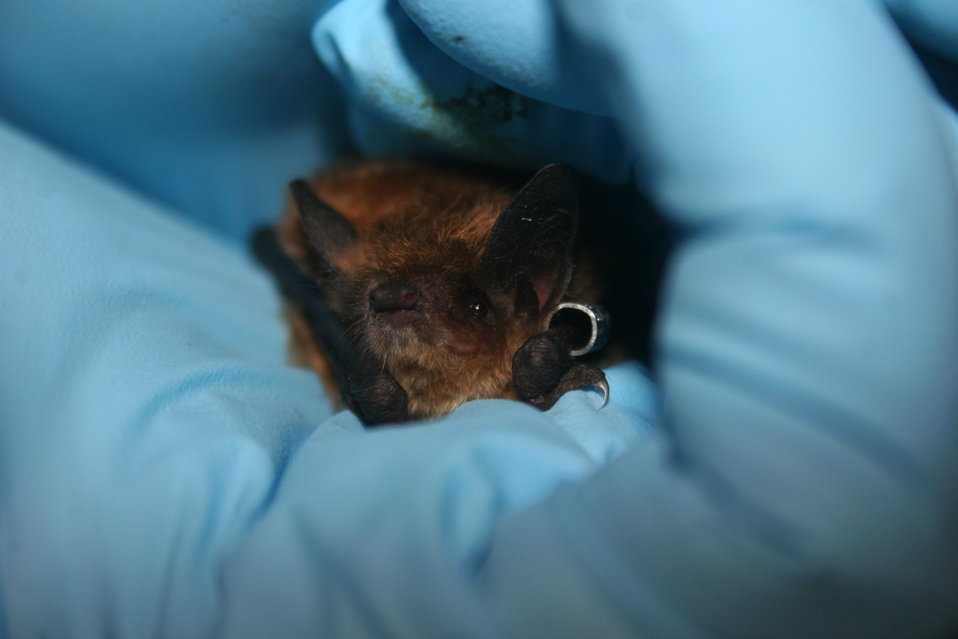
Little brown bat with wing band.